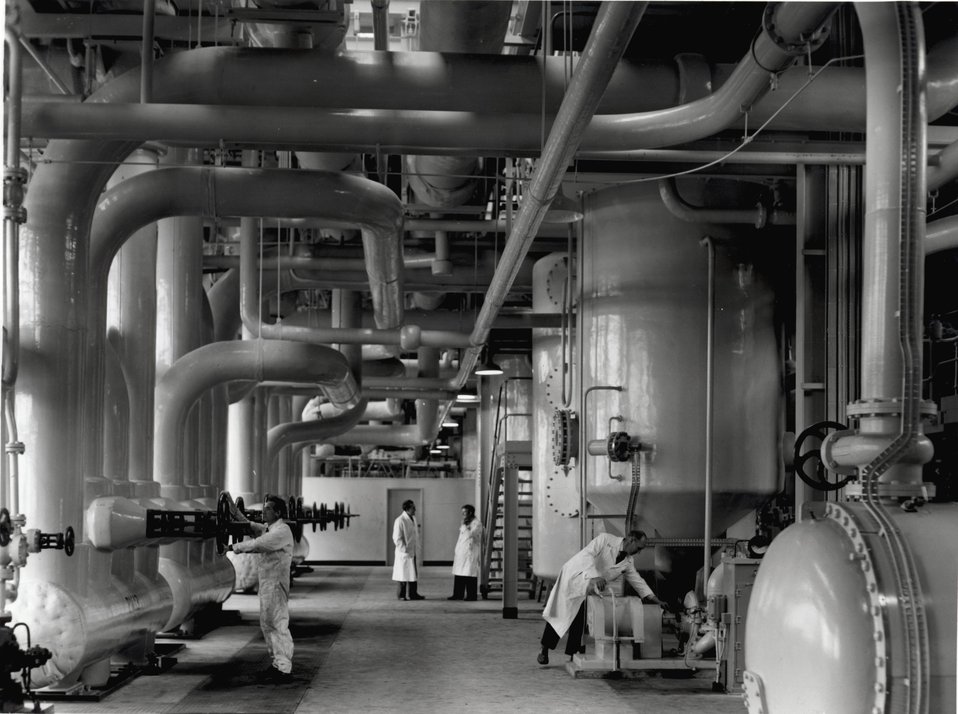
Calder Hall. The basement of the turbine hall of the Calder Hall A atomic power station showing feed water de-aerators, steam receivers, a de-superheater and the feed cooler for the heat exchangers in reactor No. 1. c. 1956